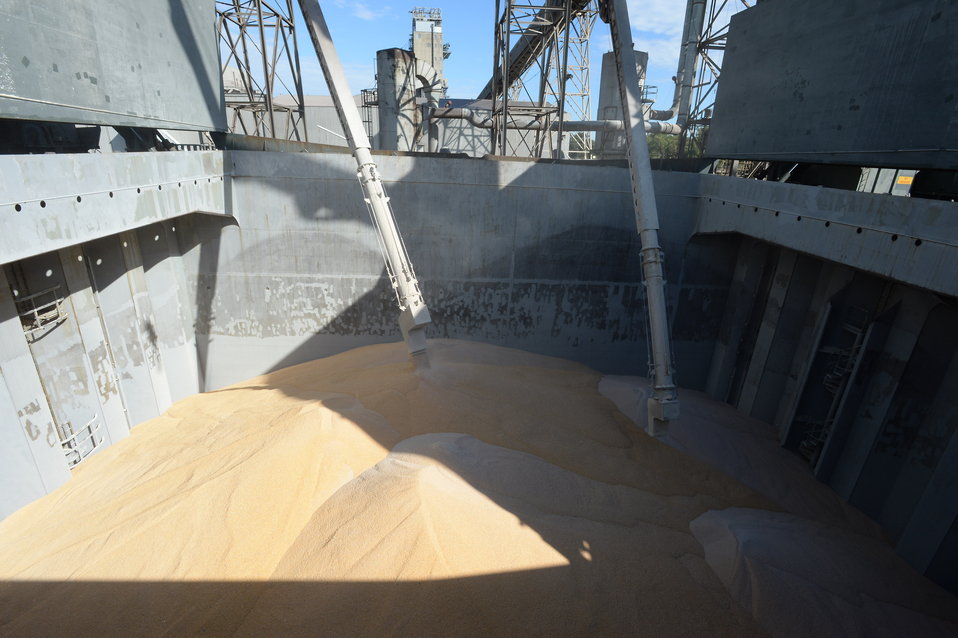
Grain is transferred from barges to to storage facilities near the Port of New Orleans in New Orleans, LA on Tuesday, Nov. 19, 2013.